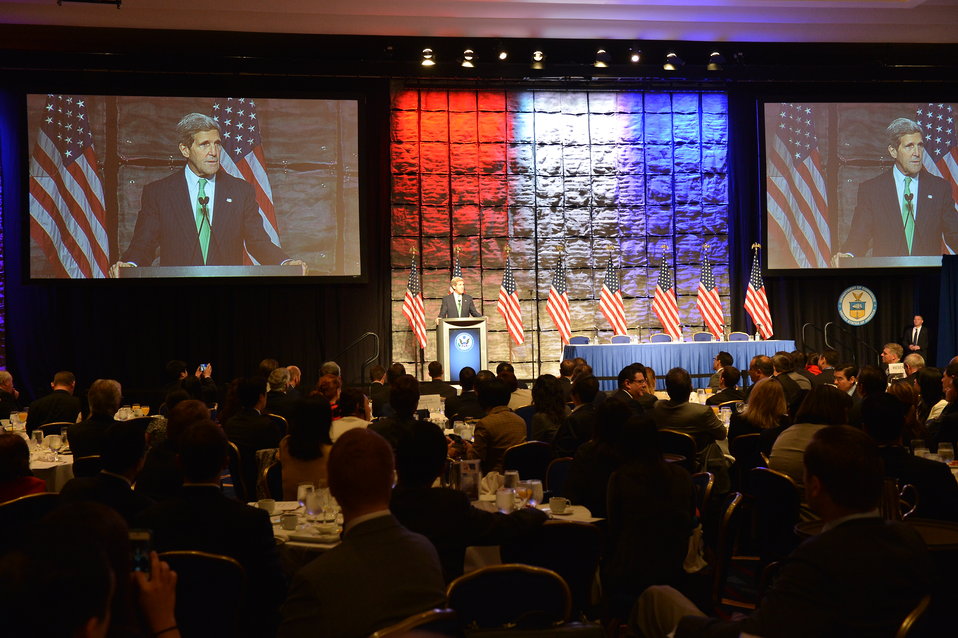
Secretary Kerry Delivers Remarks at the SelectUSA Investment Summit

U.S. Secretary of State John Kerry delivers remarks at the SelectUSA Investment Summit in Washington, D.C., on November 1, 2013.